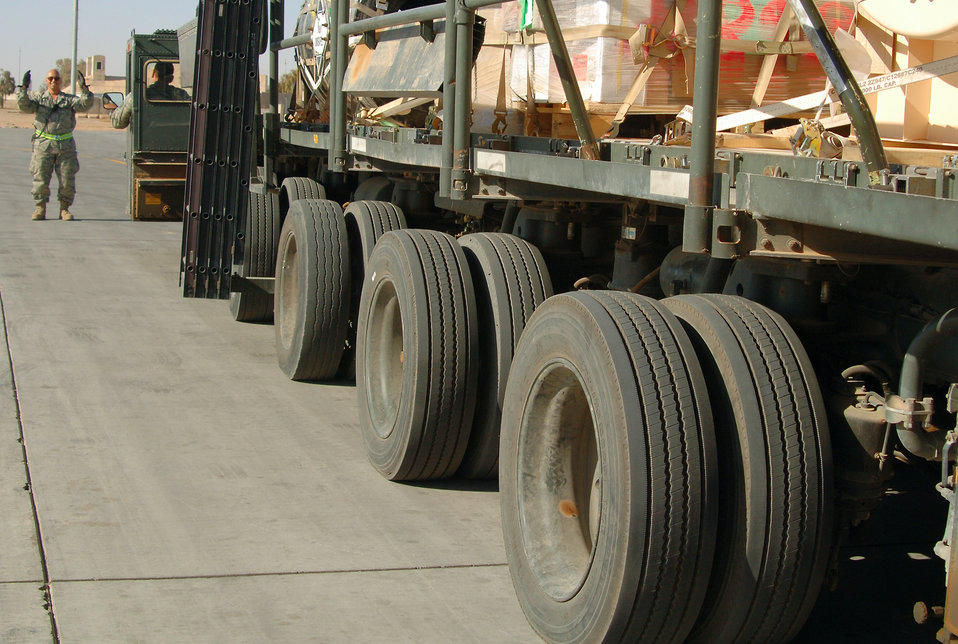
Aerial porters keep convoys off the road

Tech. Sgt. Peter Aguilar spots a 60K Tunner loader as it leaves the cargo yard at Balad Air Base, Iraq. Sergeant Aguilar, an aerial port flight ramp service technician with the 332nd Expeditionary Logistics Readiness Squadron, is a reservist deployed from the 88th Aerial Port Squadron at McGuire Air Force Base, N.J.